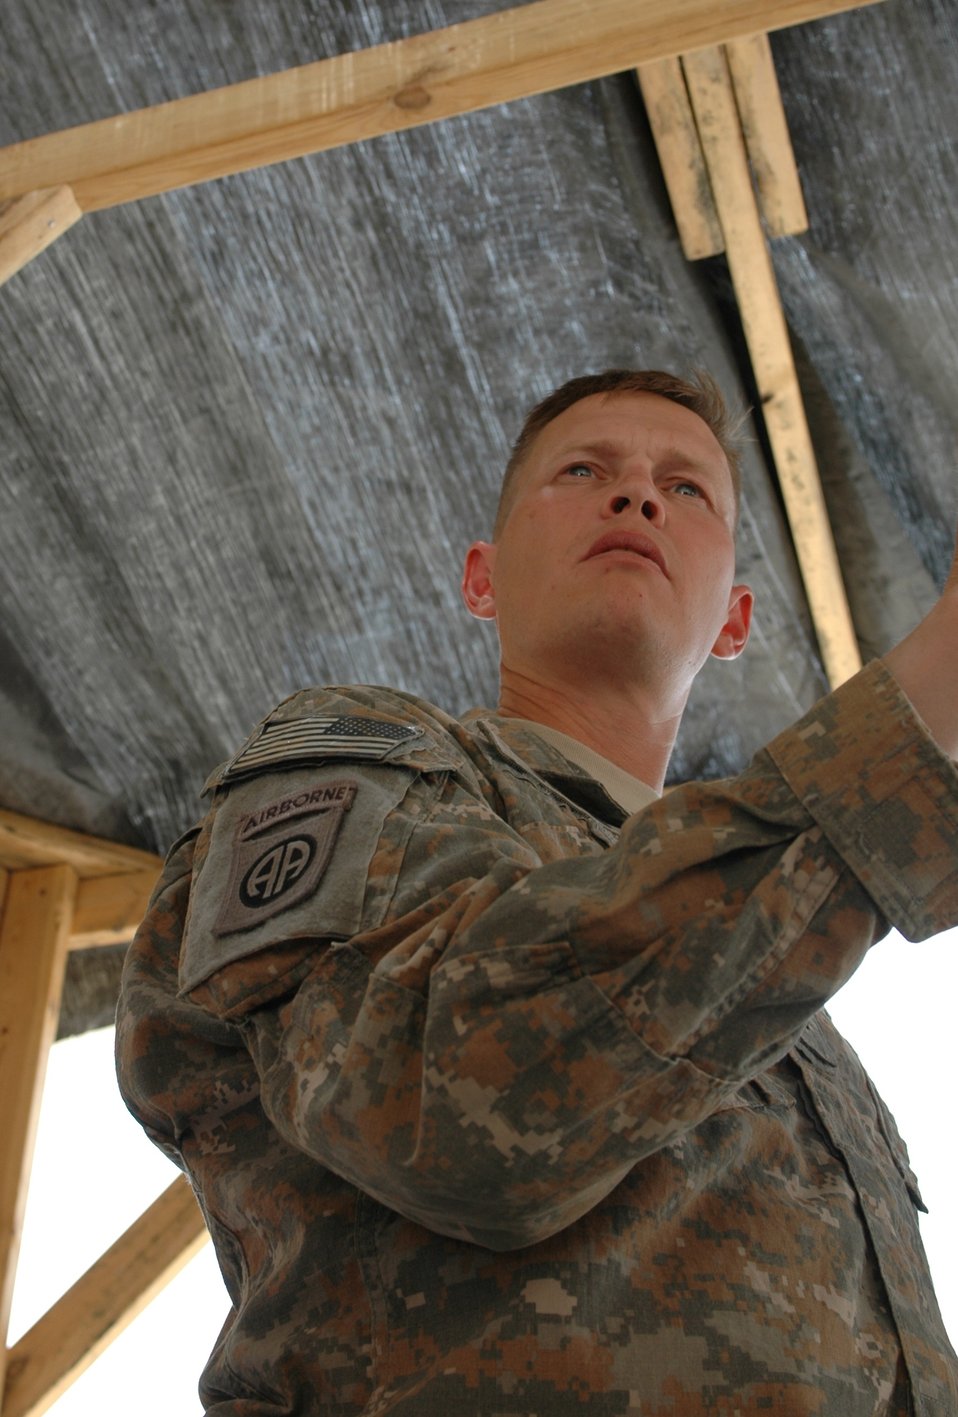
CODEL Berman